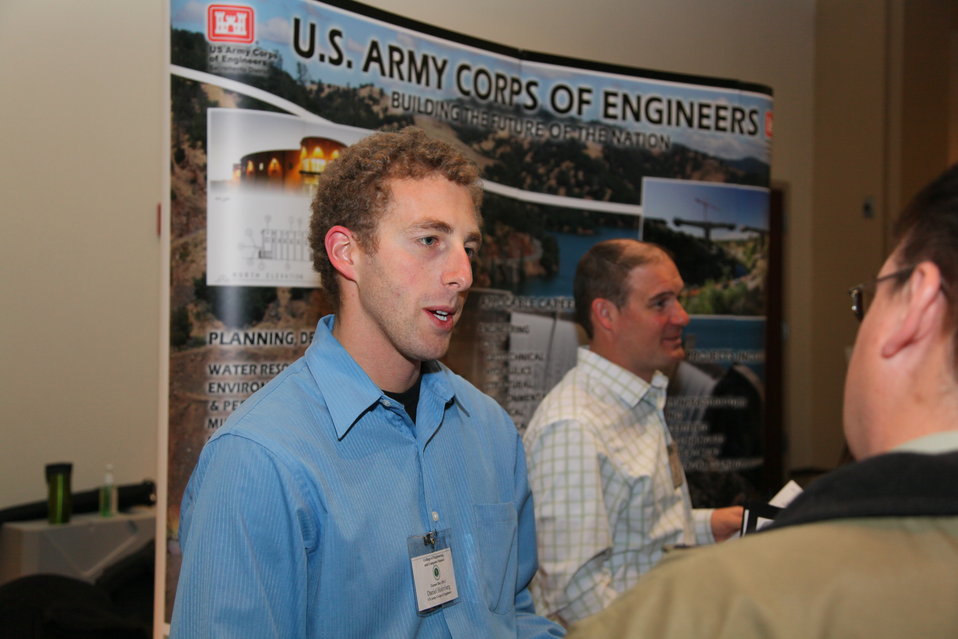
Engineers talk careers at Sac State

Daniel Holmberg (left), an environmental engineer with the U.S. Army Corps of Engineers Sacramento District, talks with a student about career opportunities in engineering at a California State University-Sacramento career fair in Sacramento, Calif., March 2, 2012. The event offered CSUS students the opportunity to connect with more than 70 employers in the fields of engineering and computer sciences.